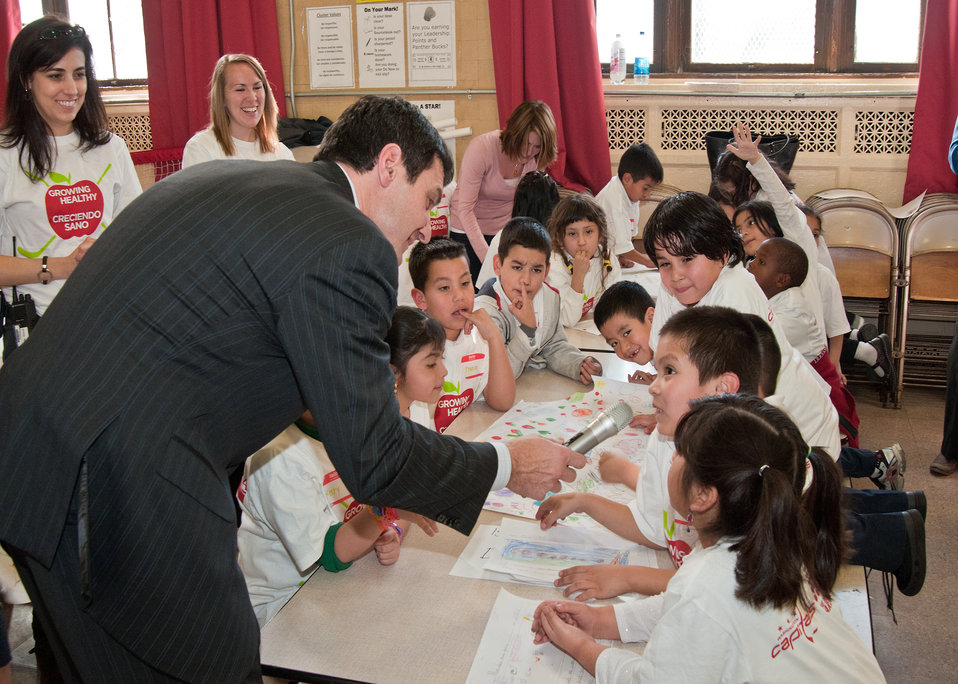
Comcast SportsNet Analyst Alan May interviews students from Cathy Moessner’s third grade class at Powell Elementary School in Washington, D.C., Thursday, February 10, 2011. May, the Washington Capitals Mike Green 2011 NHL All-Star defenseman participated in a People’s Garden Workshop with teachers and parents. In early March the students will reveal the design of their garden and at the end of the month they will build the garden. Children from pre-Kindergarten to Fourth Grade participated in the design process led by United States Department of Agriculture employees.